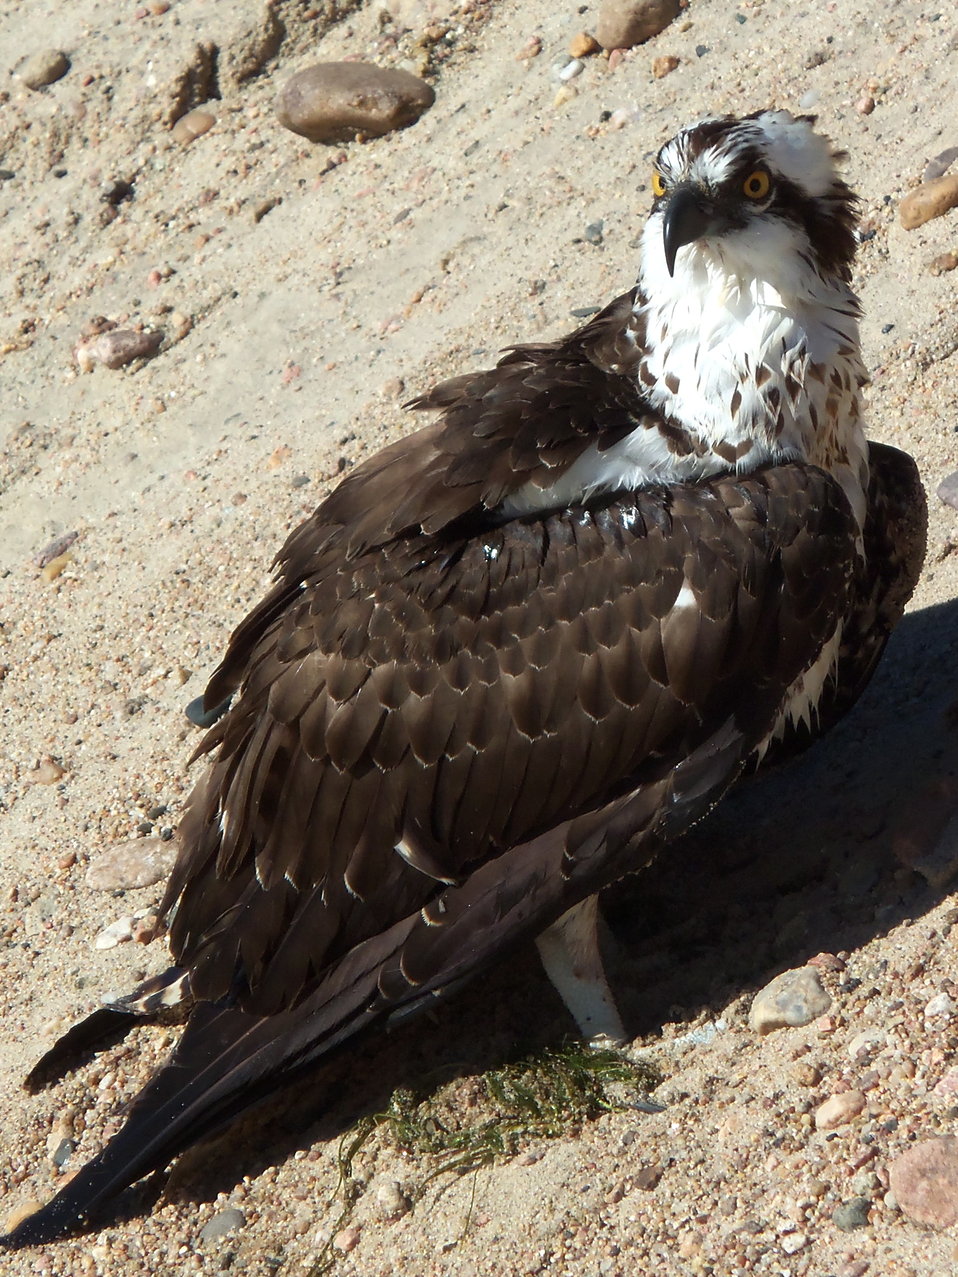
Osprey recovering on the shoreline from a dive into Lake Ogallala in Nebraska during the fall of 2011.

Photo Credit: Jamie Jones / USFWS

Photo Contest Entry #90